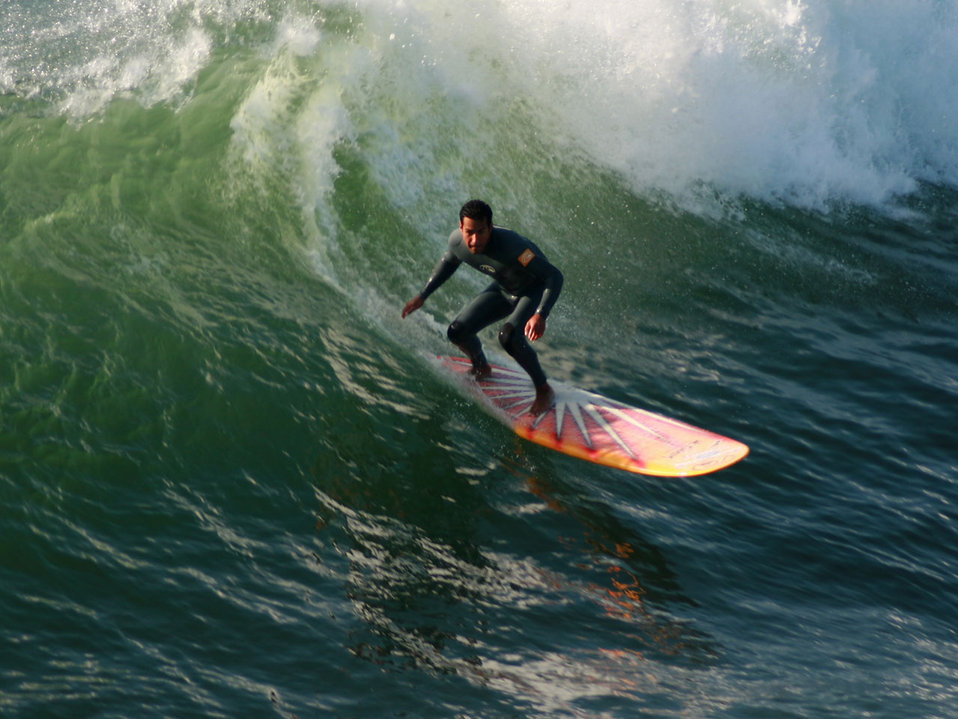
Longboard surfer drops in on a wave

Shot on the north side of huntington beach pier, huntington beach, ca, on 31 dec 2007.